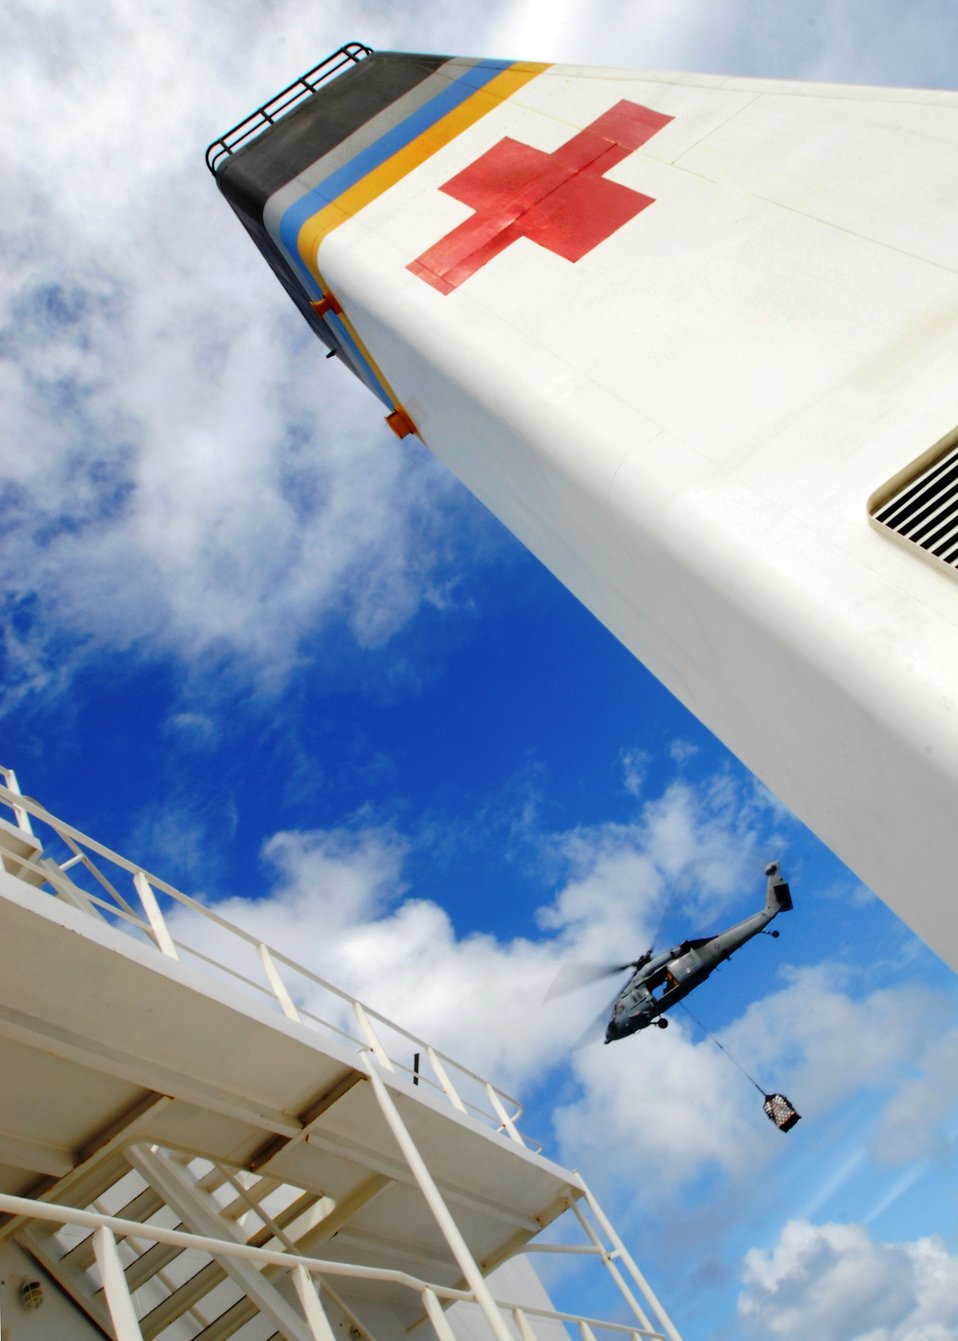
An MH-60S Knighthawk Helicopter Transports a Pallet of Goods to USNS Mercy

An MH-60S Knighthawk helicopter from Helicopter Sea Combat Squadron 23 “Wild Cards” transports a pallet of goods to the Military Sealift Command hospital ship USNS Mercy (T-AH 19) during a vertical replenishment (VERTREP) with Dry Cargo/ Ammunition Ship USNS Richard E. Byrd (T-AKE 4) on July 11, 2010. Mercy is conducting Pacific Partnership 2010, the fifth in a series of annual U.S. Pacific Fleet humanitarian and civic assistance endeavors to strengthen regional partnerships.